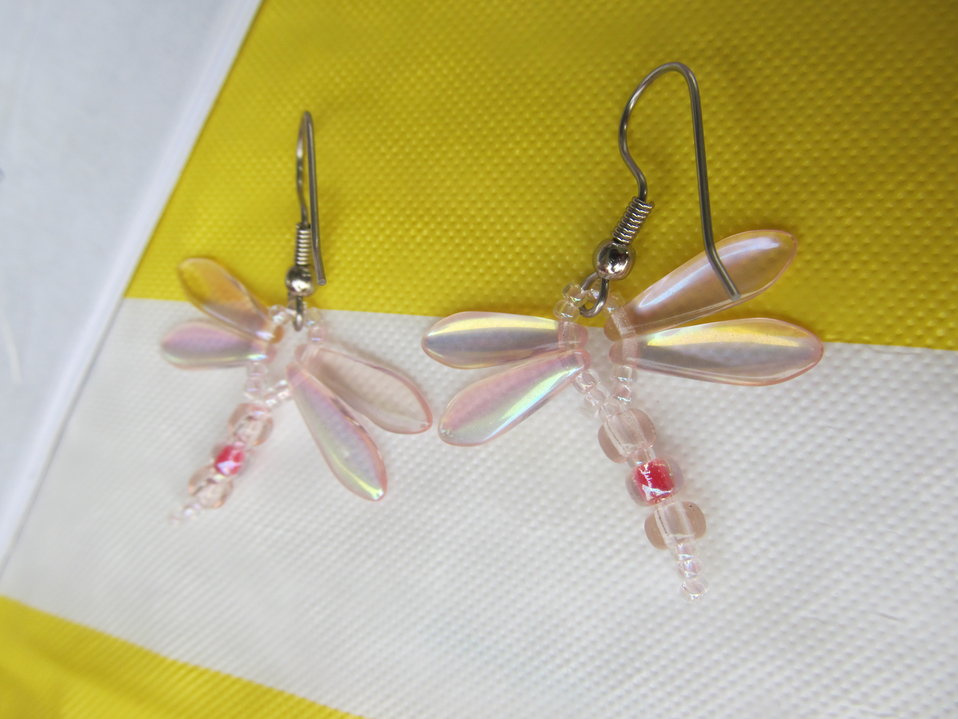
Beaded dragonfly earrings

(USFWS)